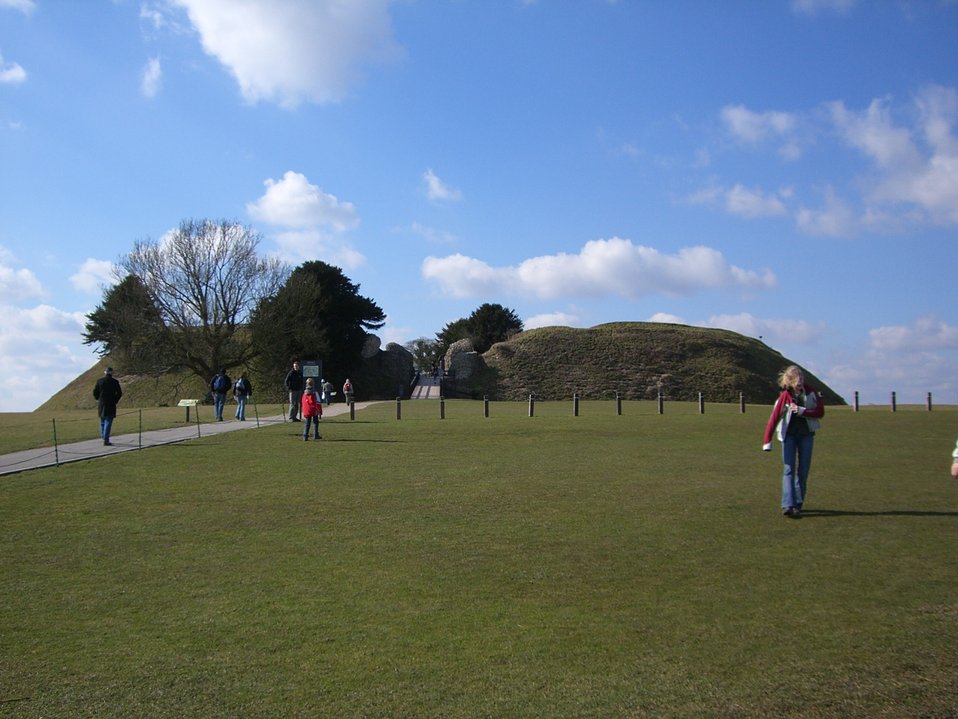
Old Sarum Български: Стар Сарум